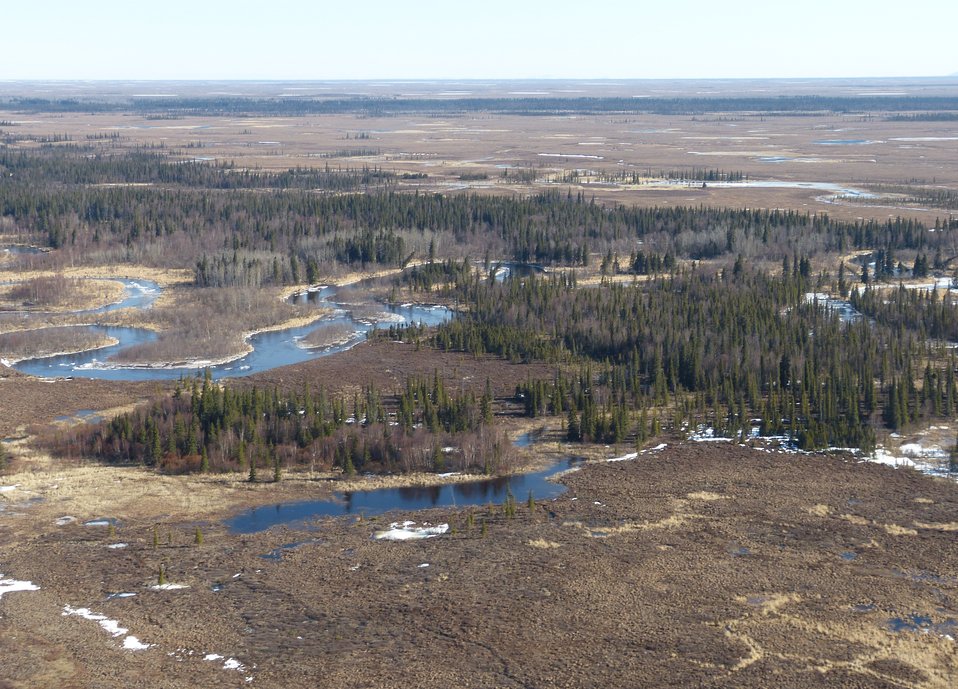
YDNWR 5-13-2013 KSowl (1)

Riparian boreal forest, Yukon Delta National Wildlife Refuge, May 13, 2013

Photo credit: Kristine Sowl,
USFWS, YDNWR